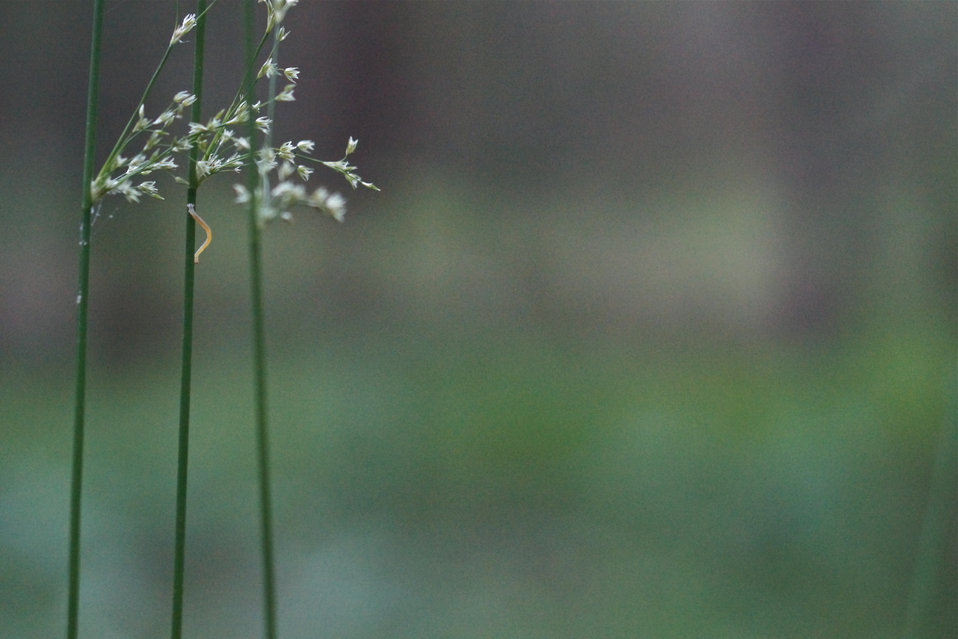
Inchworm heading up a rush

In May, bog conservationists from Tennessee, North Carolina, and Georgia convened in the north Georgia mountains for the spring, 2014 meeting of the Bog Learning Network. The event provided an opportunity for biologists to see, first hand, the result of management efforts at two north Georgia bogs. More importantly, the outings provided an opportunity to share innovative approaches to bog management, such as the role of the Georgia Plant Conservation Alliance in conserving rare plants and coordinating a cadre of volunteers to work on bog management.

The Bog Learning Network was convened in the winter of 2013 as a way to bring together people working for bog conservation across the Southern Appalachians. Southern Appalachian bogs are one of North America’s rarest habitats and home to many rare plants and animals.